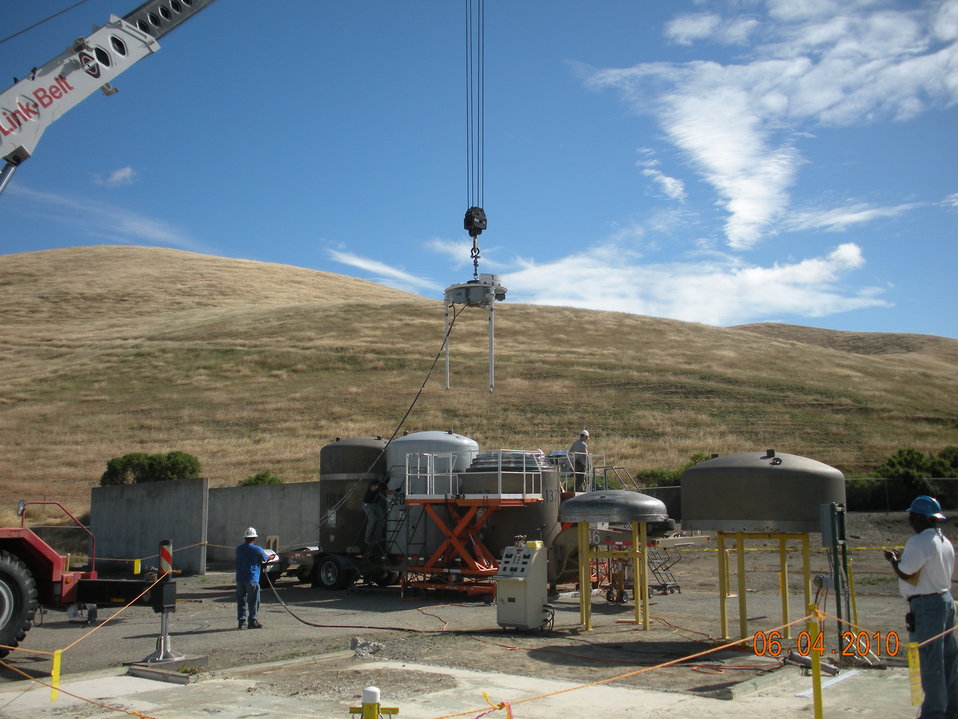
SHOWN IS A CONTACT- HANDLED TRANSURANIC WASTE SHIPMENT THAT IS LOADED FOR DEPARTURE FROM THE GENERAL ELECTRIC VALLECITOS NUCLEAR CENTER (GEVNC) IN IDAHO.